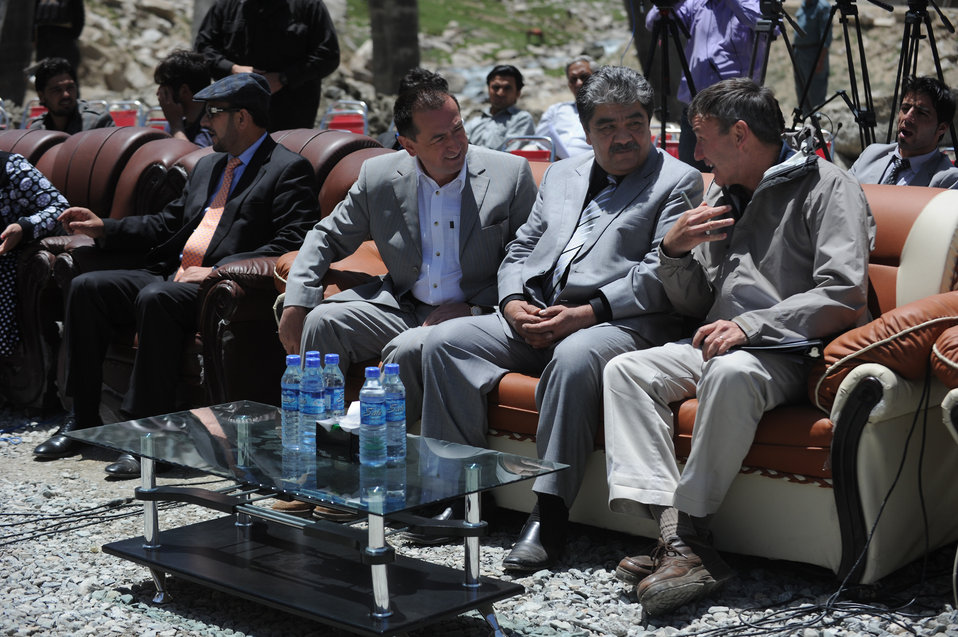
Parwan Governor Abdul Basir Salangi, Russian Ambassador Andrey Avetisyan, Minister of Public Works Abdul Qudos Niman Hamidi and U.S. Ambassador Karl W. Eikenberry attend a ceremony to mark the beginning of renovations at the Salang Tunnel on the border of Parwan and Baghlan Provinces, Afghanistan, on Wednesday, June 15, 2011. (S.K.Vemmer/Department of State)